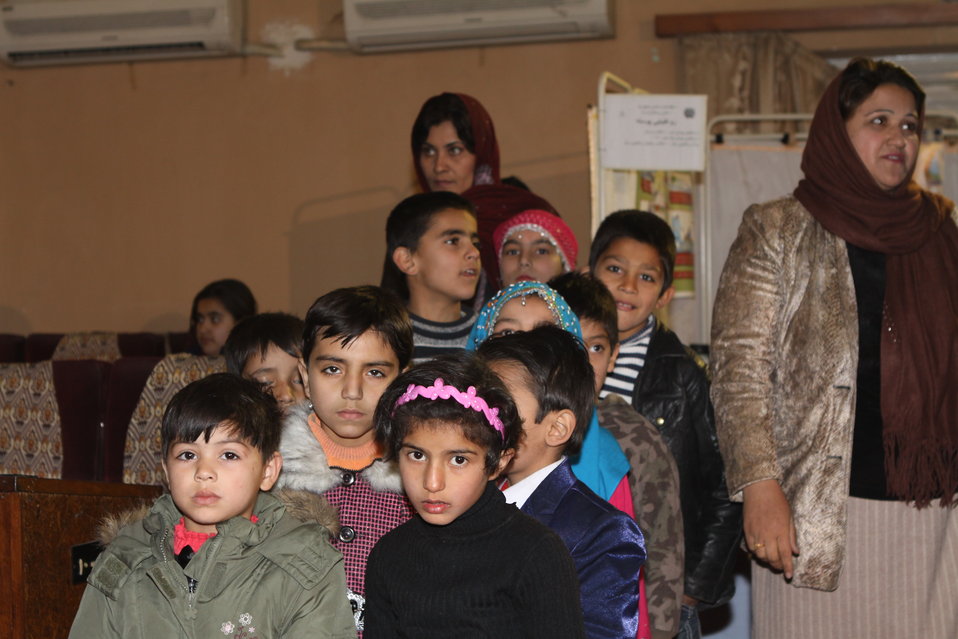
Community Health Workers Celebrated

Kabul, Afghanistan | December 5, 2010 — In support of the United Nations designated International Volunteer Day for Economic and Social Development, Afghanistan’s Ministry of Public Health celebrated its annual Community Health Worker Day today. Acting Minister of Public Health Dr. Suraya Dalil, USAID Senior Deputy Mission Director Robert Hellyer, other government officials, and international donors joined in recognizing the critical contribution of community health workers in Afghanistan and encouraging them to continue their voluntary support to their communities.
The event praised the contributions of the more than 22,000 volunteers throughout the country who deliver community level health-education, counseling, and services out of village health posts located in private homes. The Ministry of Public Health envisioned that community-based healthcare programs will actively encourage communities and families to adopt healthy lifestyles and behaviors, and provide families access to high quality and socially acceptable preventative medicine and life-saving services.
“We have 22,000 community health workers in Afghanistan that are able to implement the basic and standard medicines. They all have been trained through a job description,” said Minister Dalil. Addressing the health workers, she added, “I am proud and feel powerful that I have people like you.”
USAID-funded health projects collaborate closely with the Ministry of Public Health to improve the health and nutritional status of Afghans, provide quality primary healthcare, and promote healthy behaviors at the community and household-levels. USAID supported the training of more than 9,000 of the volunteer community health workers currently working in Afghanistan.
“On behalf of the American people, I congratulate the Community Health Workers for their diligence to gain the skills and knowledge necessary to serve their communities in this important role,” said USAID Senior Deputy Mission Director Hellyer. “USAID strongly supports community based health care and believes that quality community-based health services are essential to reaching Afghanistan’s Millennium Development Goals.”
To support the Basic Package of Health Services, USAID assisted in developing the community health worker training manual, helped train community health worker supervisors and master-trainers, facilitated in-service training, and produced and developed reporting tools, job aids, and education materials.